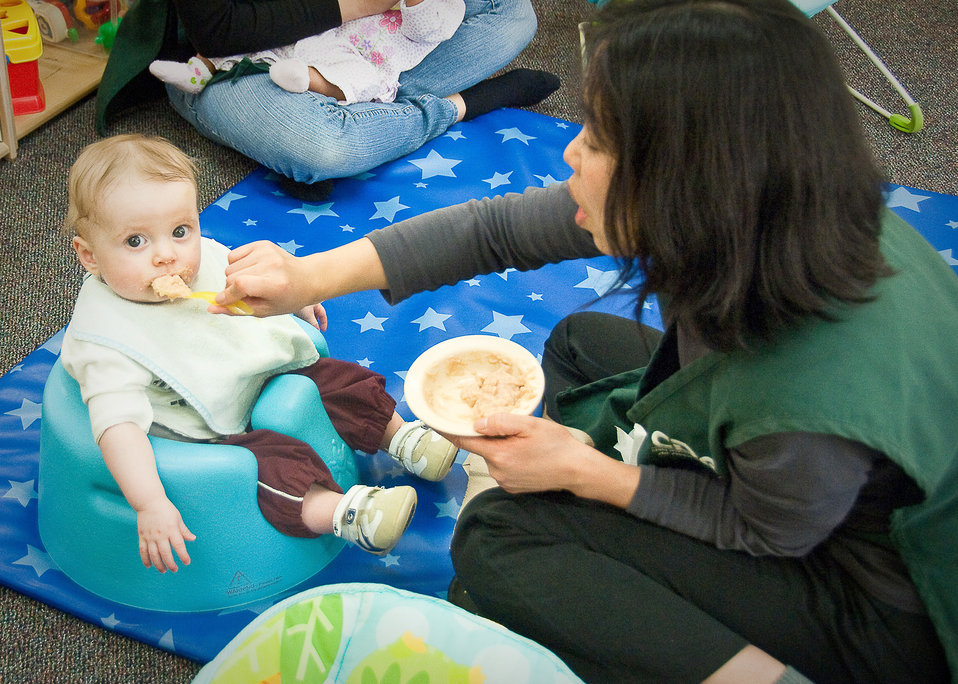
Yokota CDCs

Yukie Kuramochi, a caregiver at the Yume Child Development Center at Yokota Air Base, Japan, feeds a child April 12, 2011. Caregivers at Yokota Air Base CDCs work together to continue normal routines with the children by carrying on everyday activities in the aftermath of the earthquake and tsunami.